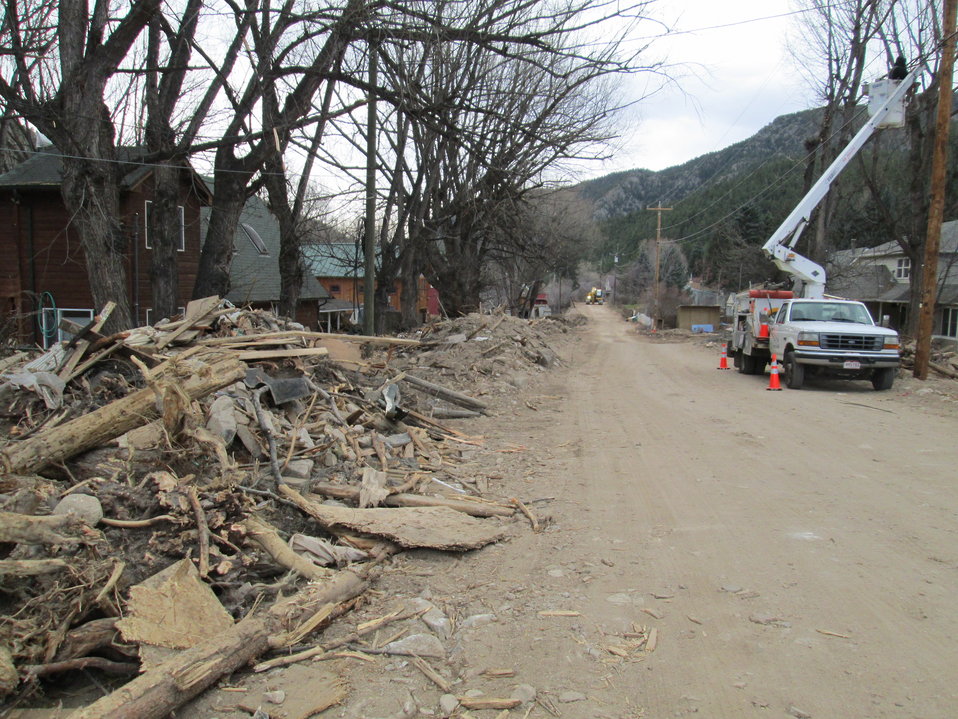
near Elysian Park, CO, November 19, 2013

Entire neighborhoods were destroyed by floodwaters. Flood debris lined the streets of this neighborhood near Elysian Park as extensive cleanup efforts and utility repairs were underway.